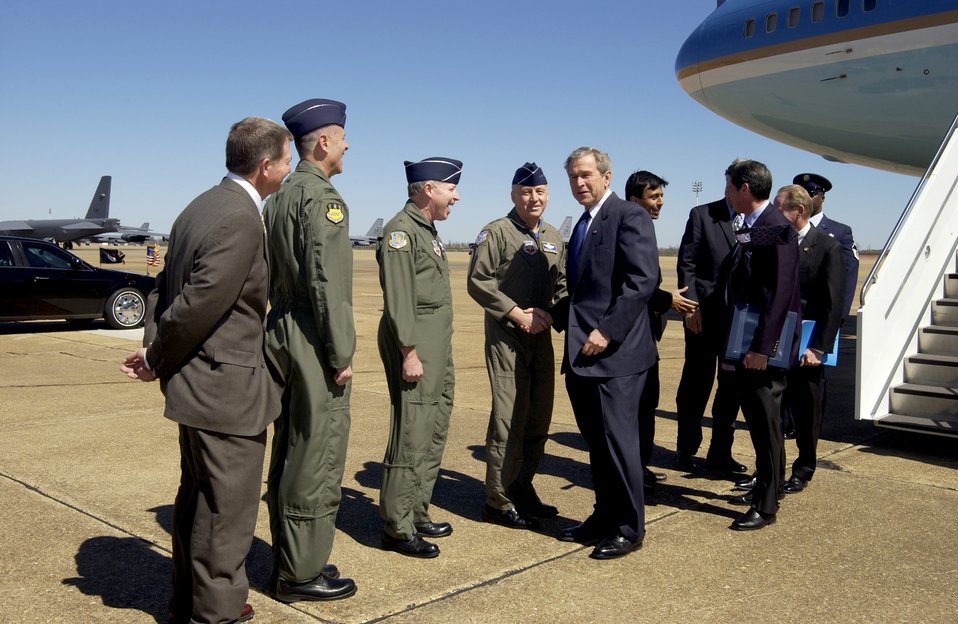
Bush breezes through Barksdale

BARKSDALE AIR FORCE BASE, La. - President George W. Bush is welcomed here by Lt. Gen. Bruce Carlson, 8th Air Force commander (shaking hands); Brig. Gen. Jack Ihle, 917th Wing commander; and Col. Michael Moeller, 2nd Bomb Wing commander.